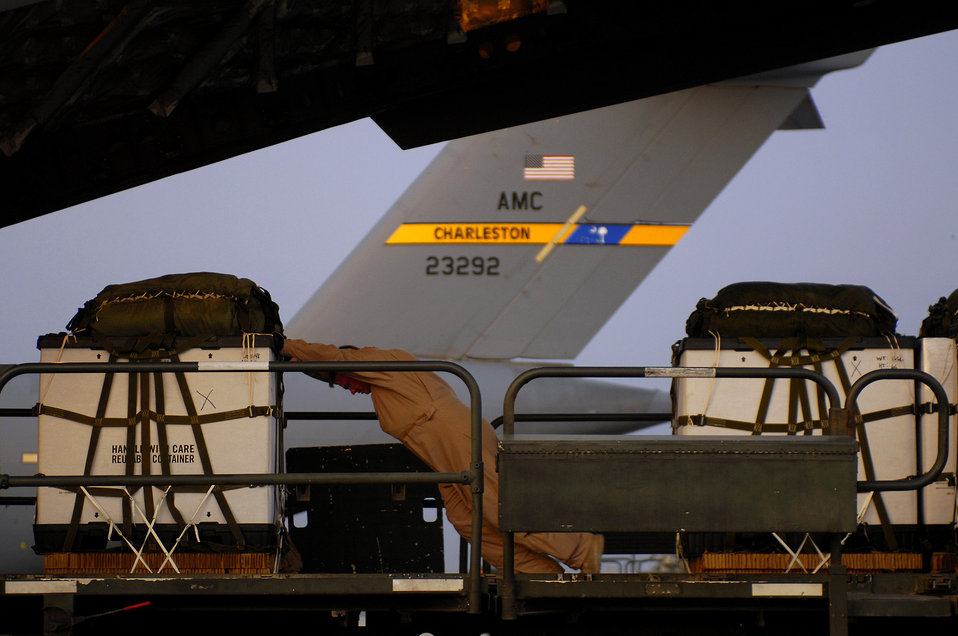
Afghanistan airdrop

Senior Airman Matt Johnson loads one of 40 bundles on a C-17 Globemaster III for a Joint Precision Airdrop Delivery System of humanitarian supplies to a drop zone April 13 in Afghanistan. Airman Johnson is from the 17th Airlift Squadron from Charleston Air Force Base, S.C., and is deployed to the 816th Expeditionary Airlift Squadron in Southwest Asia.